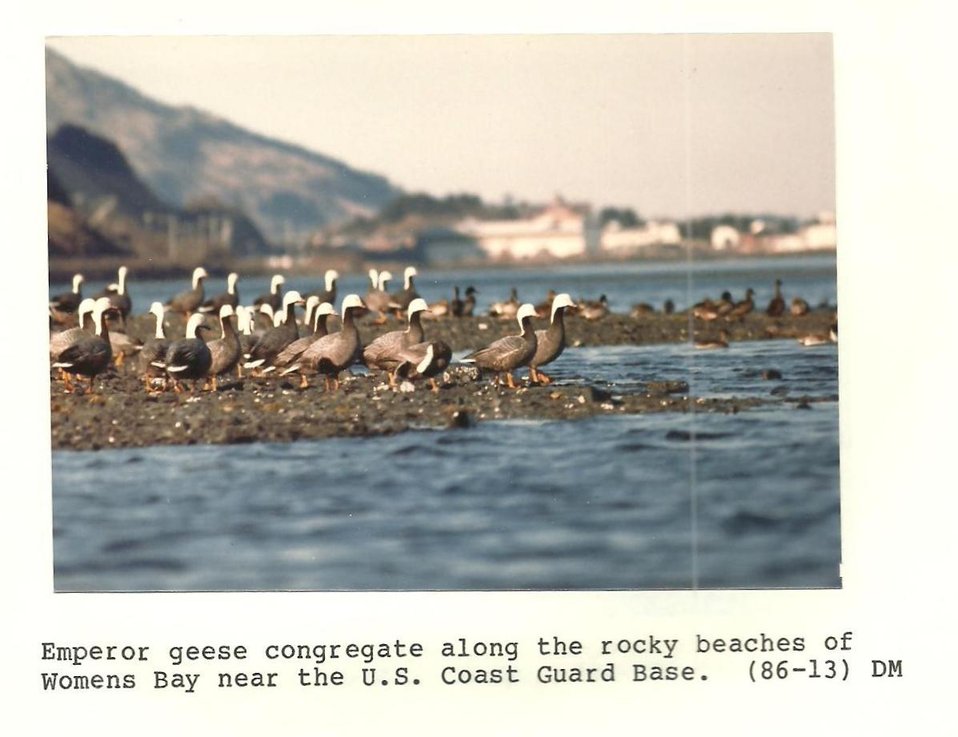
(1986) Emperor Geese

Credit: USFWS

Source and Contact: Kodiak National Wildlife Refuge